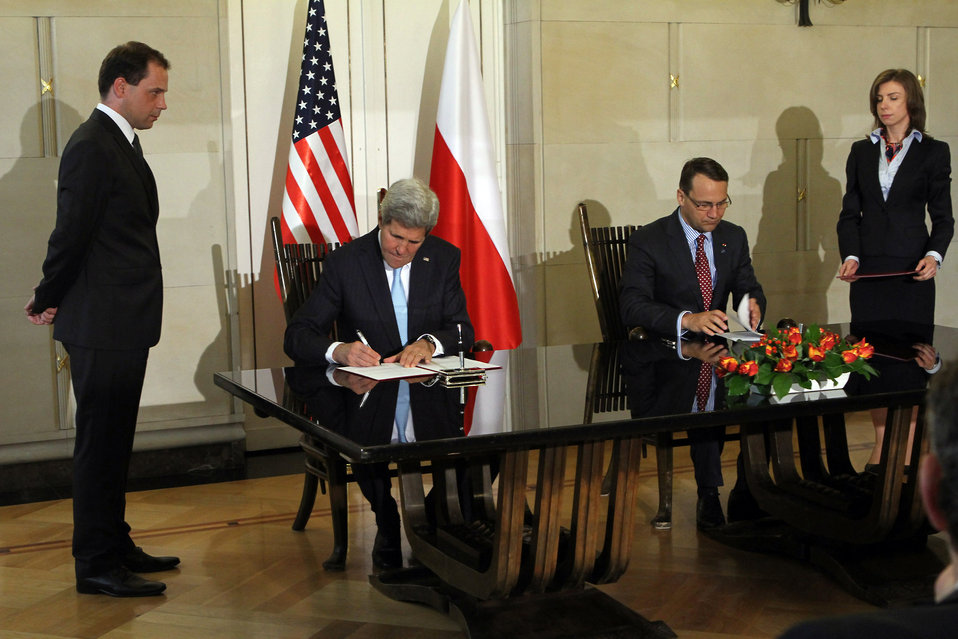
Secretary Kerry and Polish Foreign Minister Sikorski Sign the Innovation Framework Agreement

U.S. Secretary of State John Kerry and Polish Foreign Minister Radoslaw Sikorski sign the Innovation Framework Agreement at a ceremony at the Ministry of Foreign Affairs in Warsaw, Poland, on June 3, 2014.